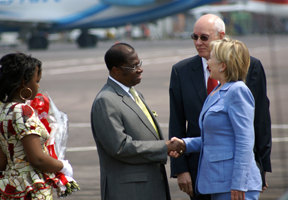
Secretary Clinton Arrives in Kinshasa

U.S. Secretary of State Hillary Rodham Clinton is greeted at the airport as she arrives in Kinshasa, Democratic Republic of the Congo August 10, 2009.